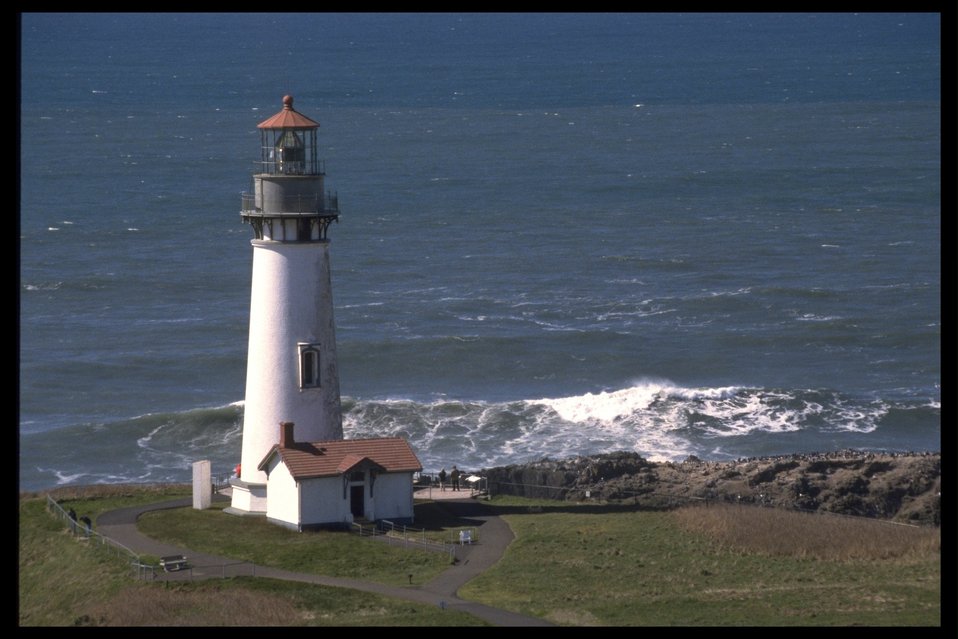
Yaquina Head Lighthouse.